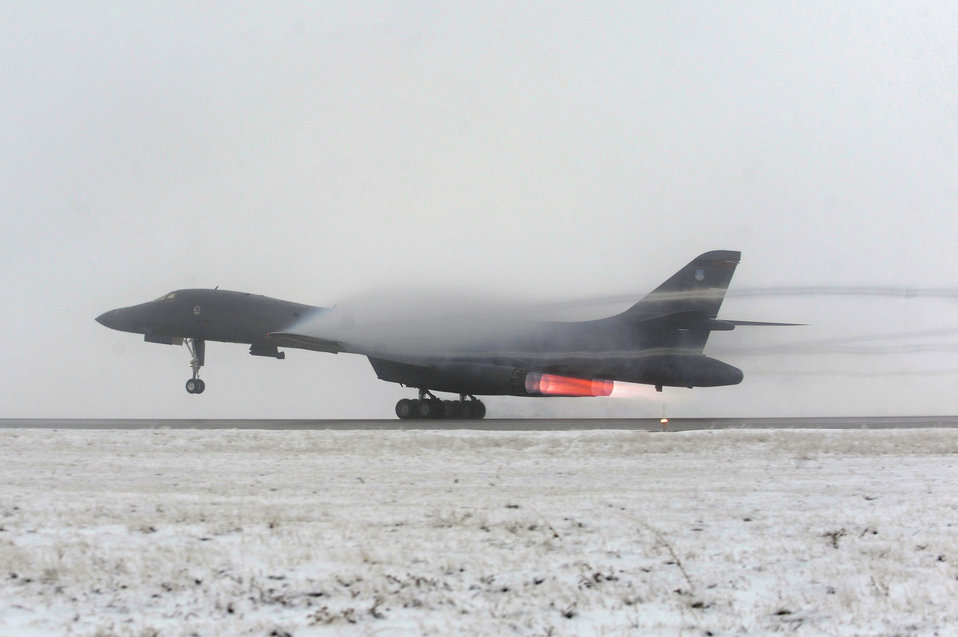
The mission begins

A B-1B Lancer takes off from Ellsworth Air Force Base, S.D., March 27, 2011, on a mission in support of Operation Odyssey Dawn.